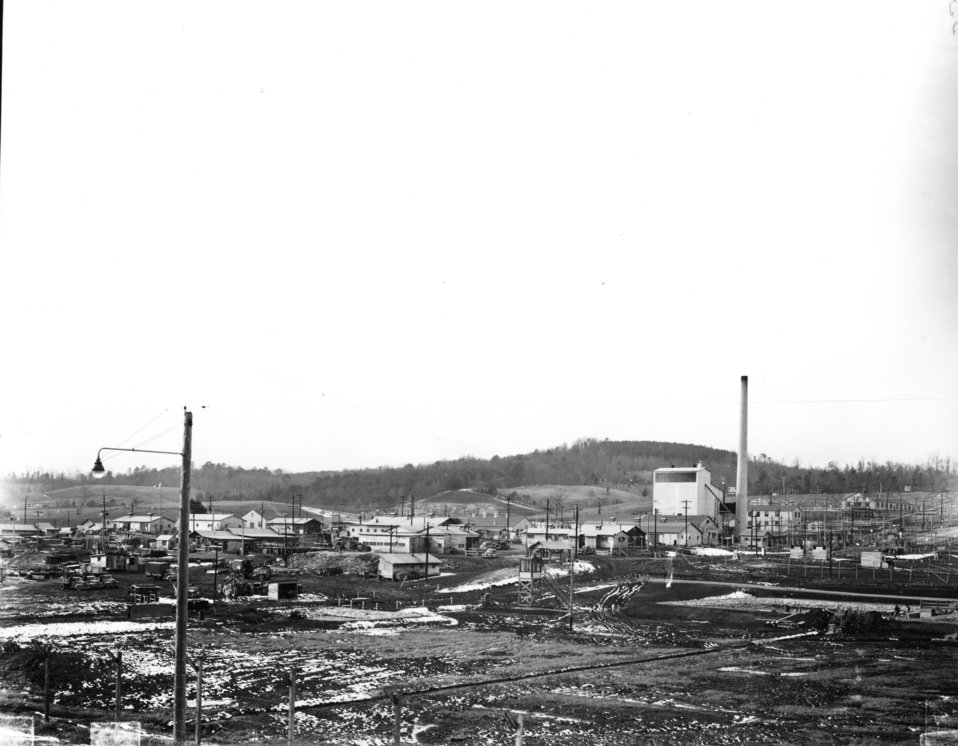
X-10 at Oak Ridge